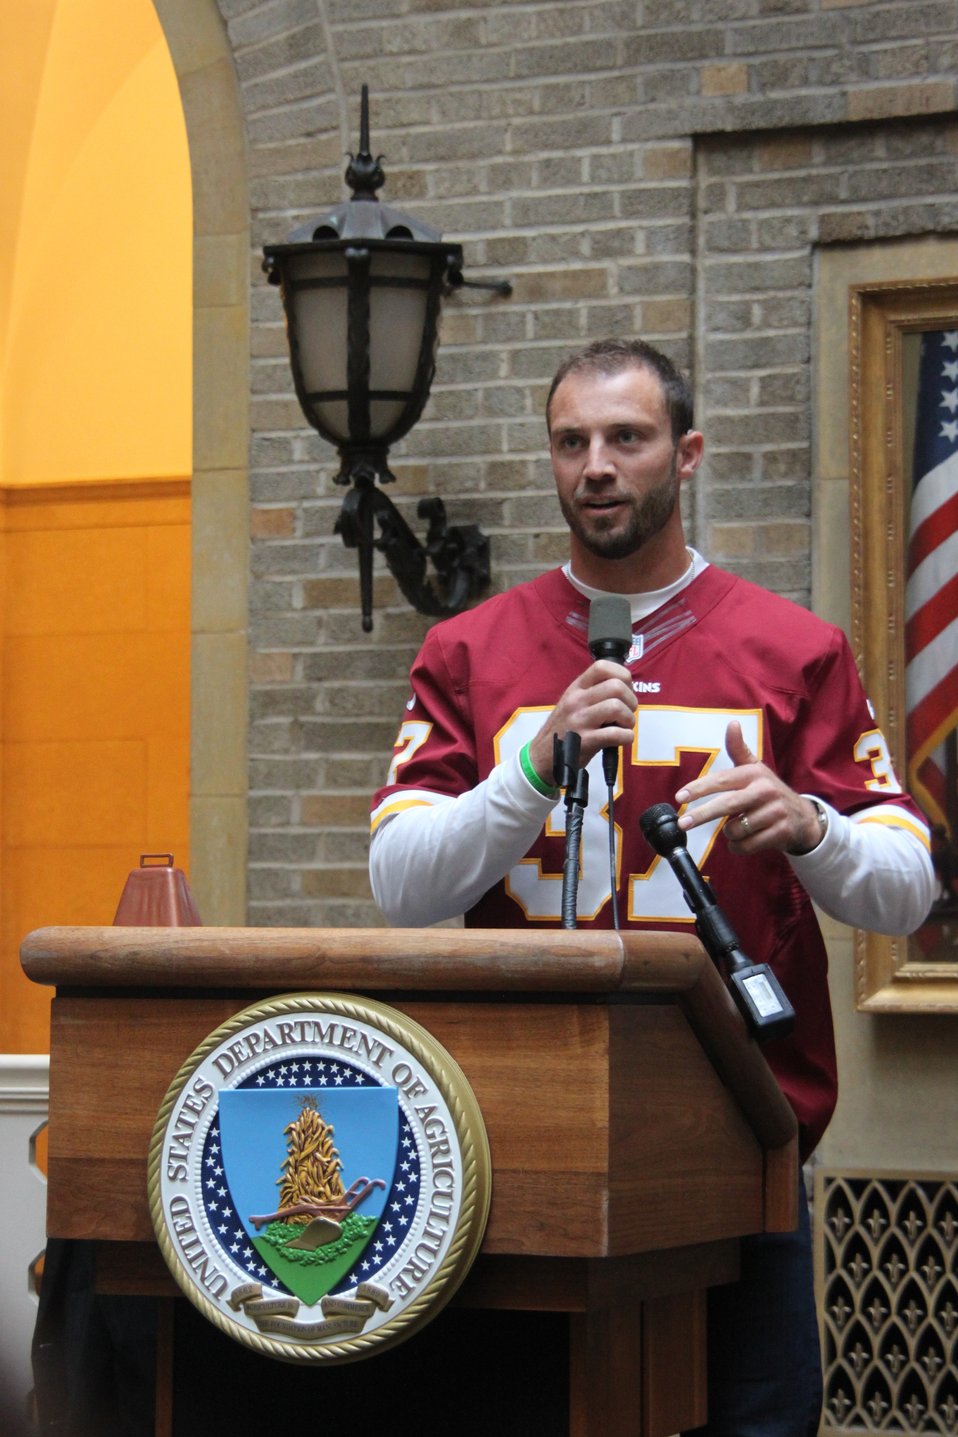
Washington Redskins Safety Reed Doughty

Washington Redskins player Reed Doughty and Fuel Up to Play 60 helps start the U.S. Department of Agriculture's (USDA) Farmers Market season on Friday, Jun. 7, 2013. Doughty stressed the importance of making sure children are getting at least 60 minutes of activity a day.